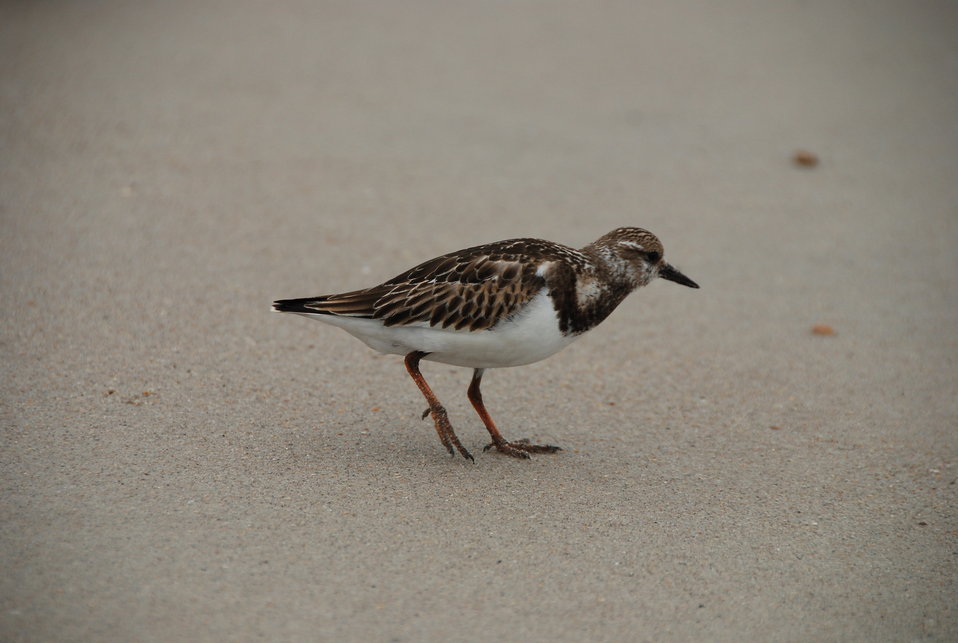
Ruddy turnstone